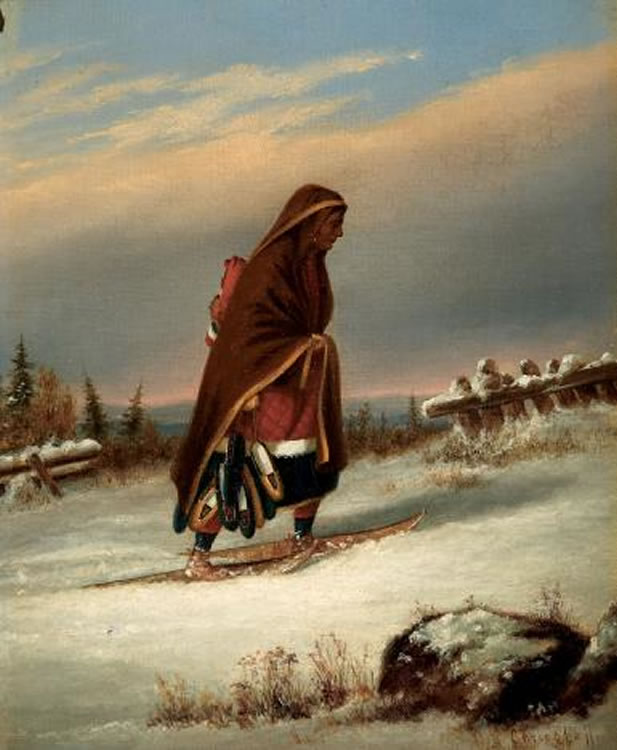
'Indian Mocassin Seller', oil paintings by Cornelius Krieghoff, 11.1 x 9 in.